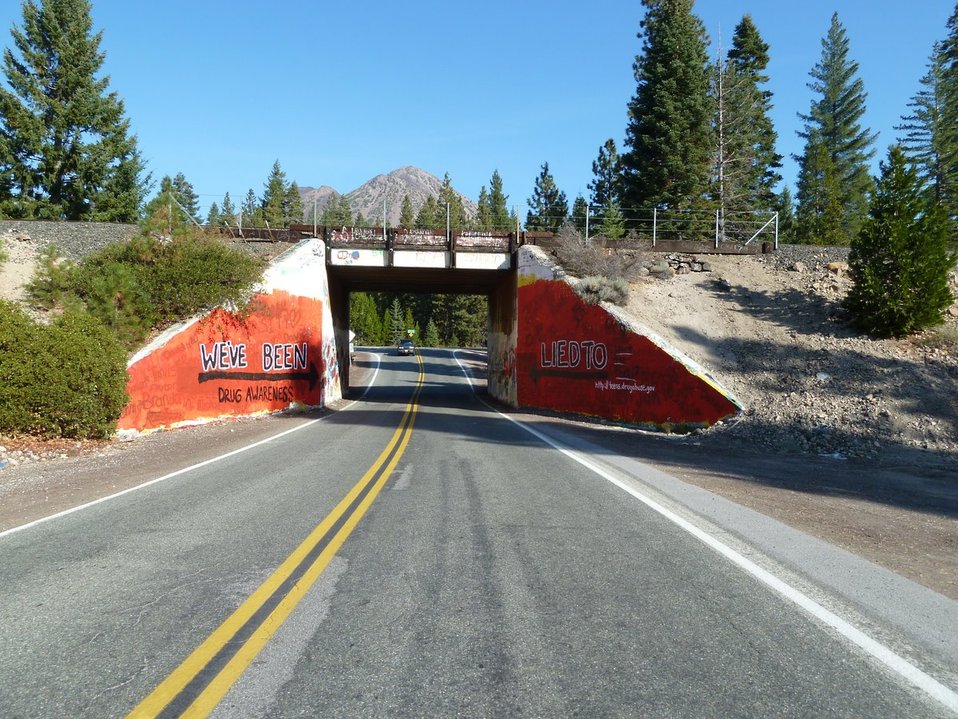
Siskiyou County, CA Drug Facts Week Photos

Students from the leadership class at Mt. Shasta High School painted this bridge to honor those who lost their lives to drug addiction. They also shatter the myths about drug and tobacco companies, and encourage teens to get the facts by visiting the NIDA website for teens.